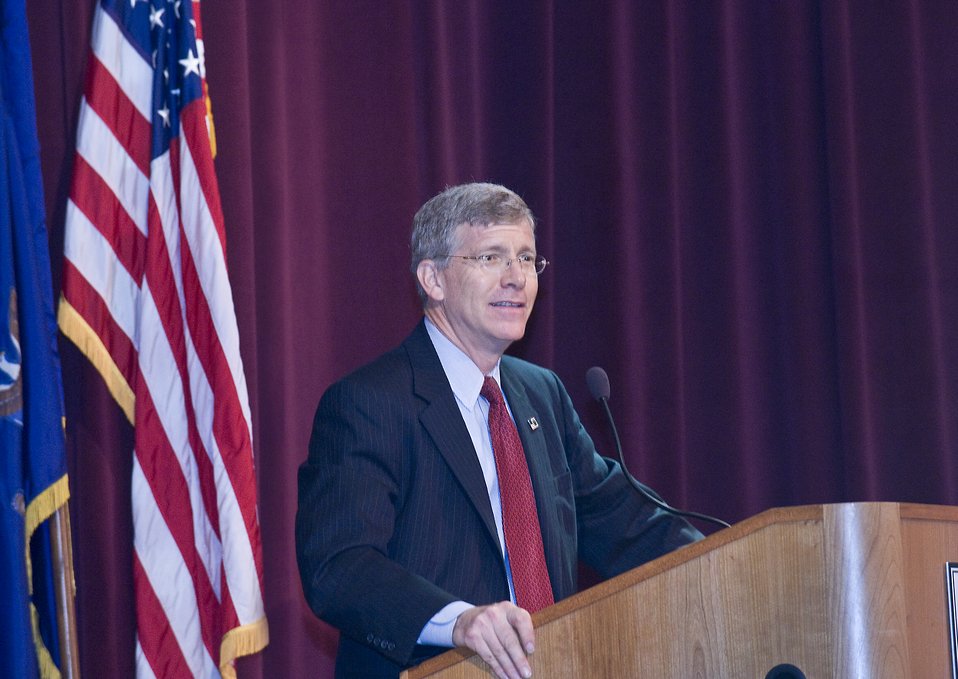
Brookhaven 2

Deputy secretary of doe.Daniel poneman